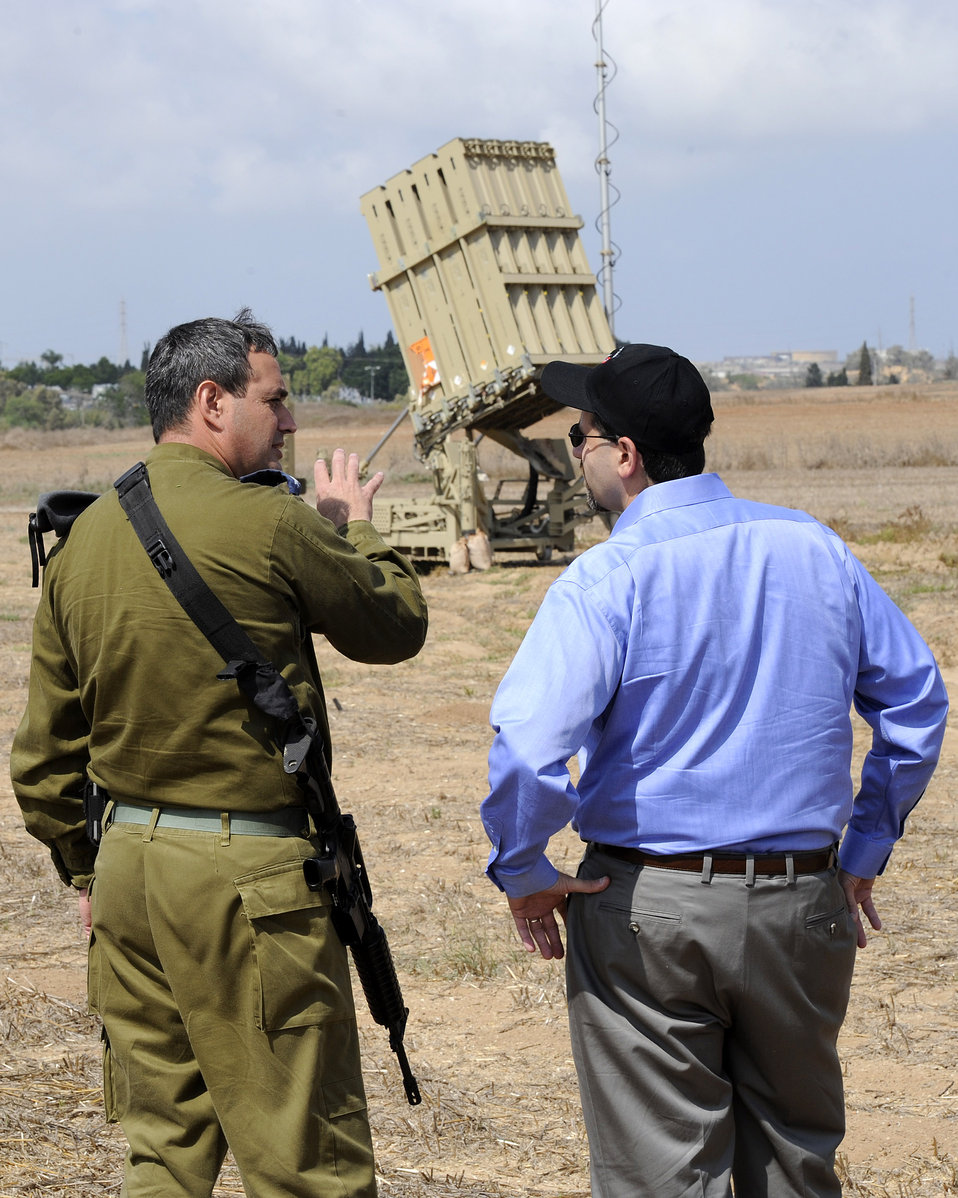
Ambassador Shapiro Tours the Iron Dome Battery in the South of Israel

U.S. Ambassador to Israel Daniel B. Shapiro, hosted by Captain Elad Tzinman, Israeli Air Force Battery Commander, and Colonel Tzvika Chaimovitch, Israeli Air Force 167 Wing Commander, travels to the south of Israel for a tour of the Iron Dome Battery in Ashkelon, Israel, on August 9, 2011.